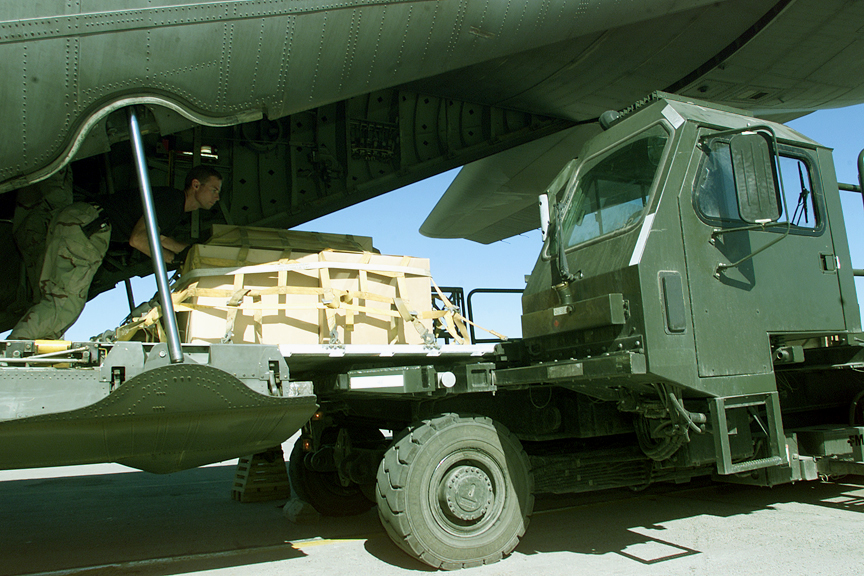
Unloading cargo

MANAS AIR BASE, Kyrgystan -- Airmen unload freight from a C-130 Hercules aircraft here. Manas is the primary hub for moving people and logistical support for Operation Enduring Freedom.